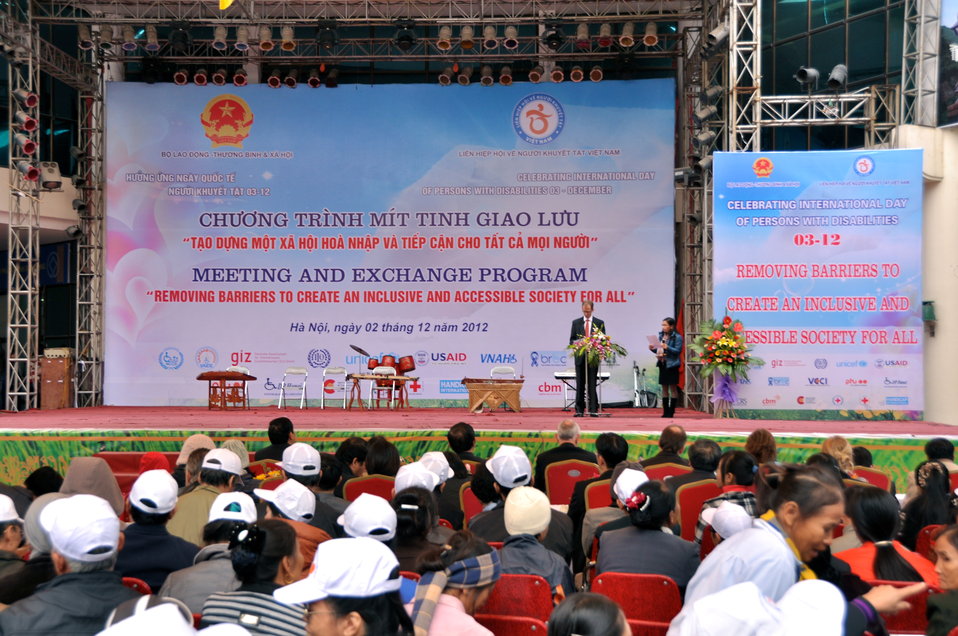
USAID joins celebration of International Day of Persons with Disabilities in Hanoi, Vietnam

December 2, 2012